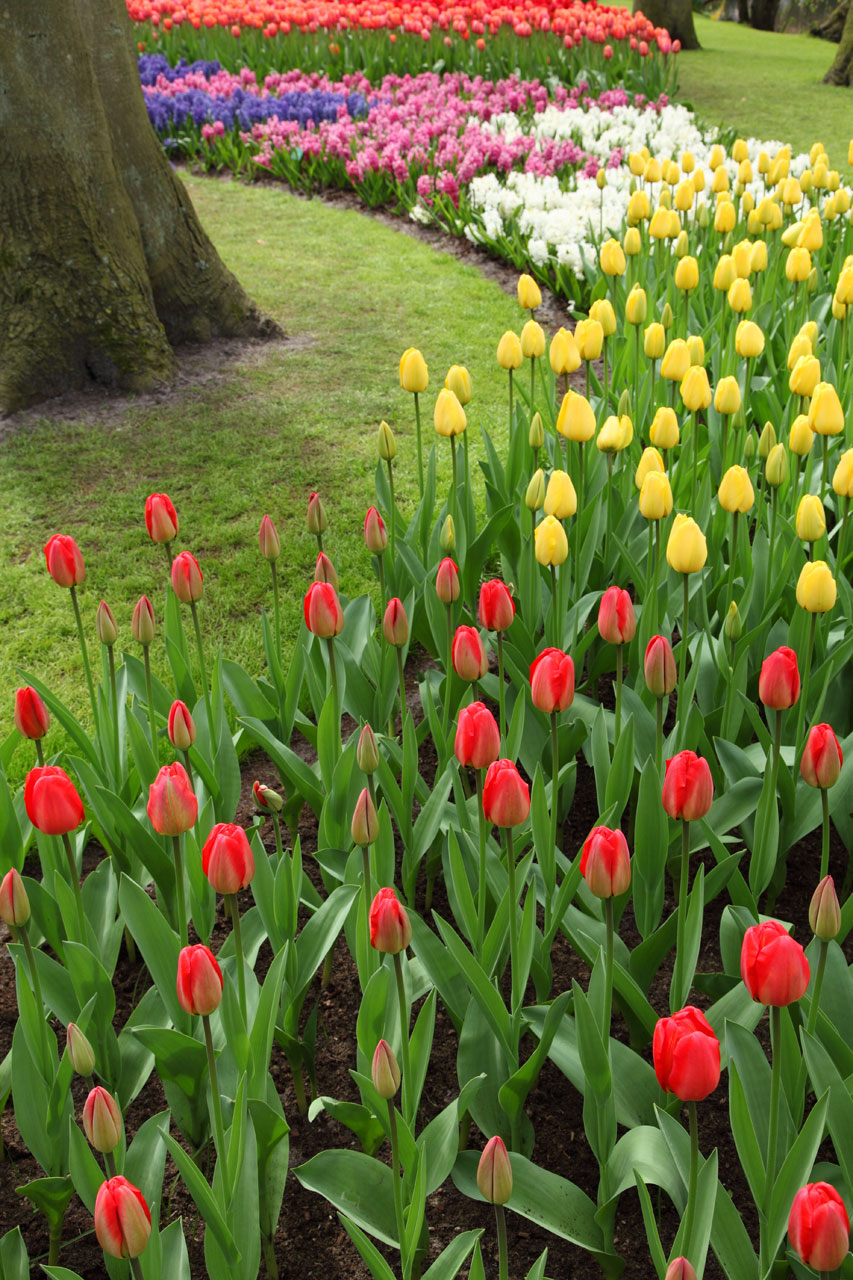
Colorful tulips and hyacinths in keukenhof.